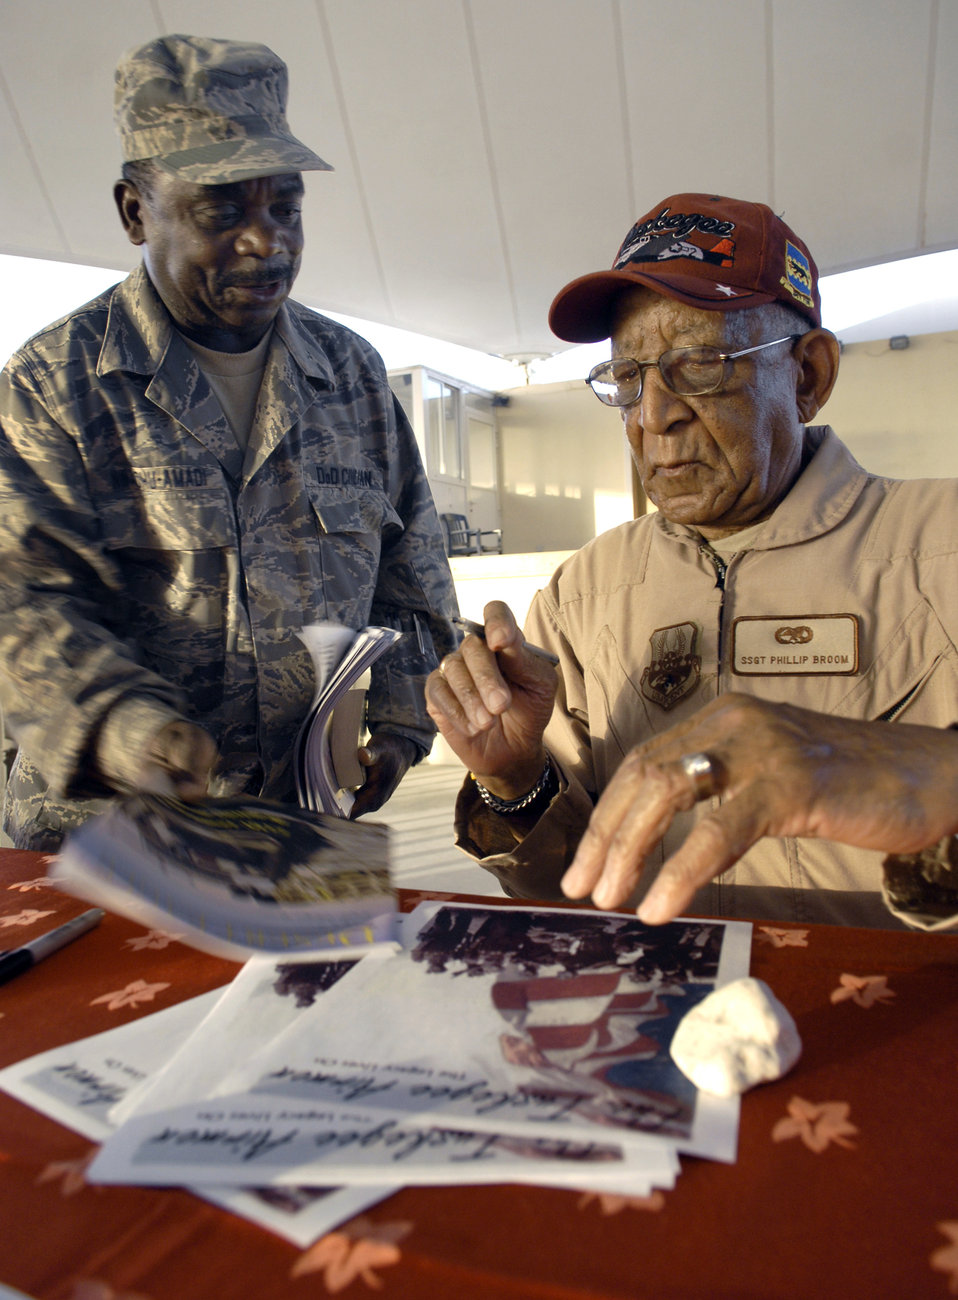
Tuskegee Airmen visit Southwest Asia

Tuskegee Airman Staff Sgt. Phillip Broom signs an autograph for Kasie Nwaohu-Amadi during a visit April 22 to a base in Southwest Asia. Sergeant Broom was part of a group of Tuskegee Airmen touring the area of responsibility. Mr. Nwaohu-Amadi is a chemist with the 379th Expeditionary Logistic Readiness Squadron, and deployed from Wright-Patterson Air Force Base, Ohio.